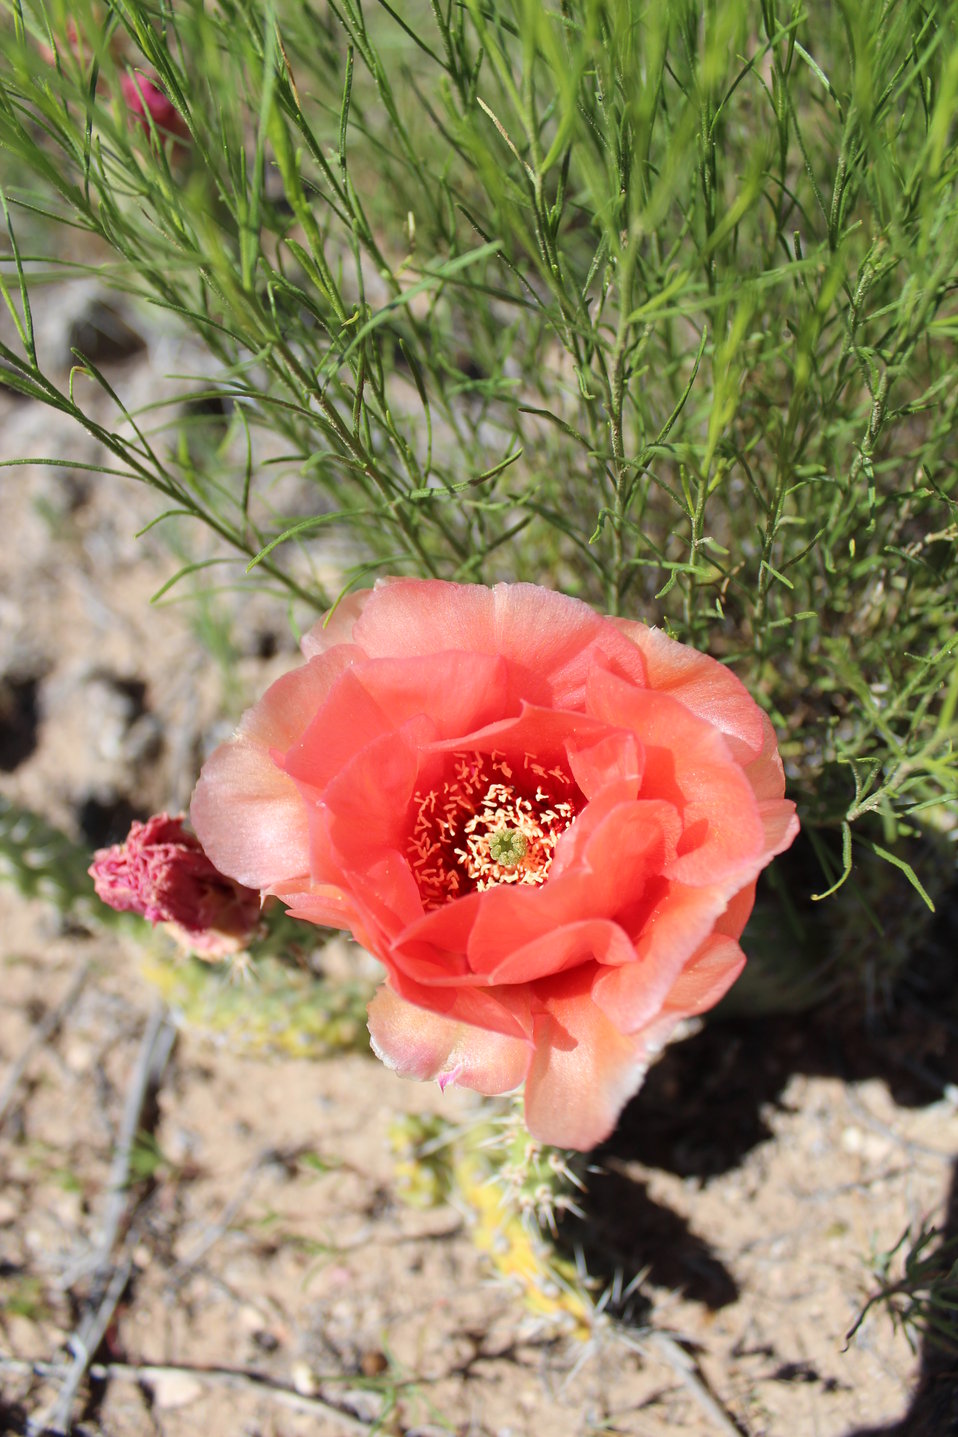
Prickly Pear Cactus

These beauties are abundant throughout Ouray NWR and Utah.

Location: Ouray NWR

Credit: Jaclyn Kircher / USFWS

Photo Contest Entry #33